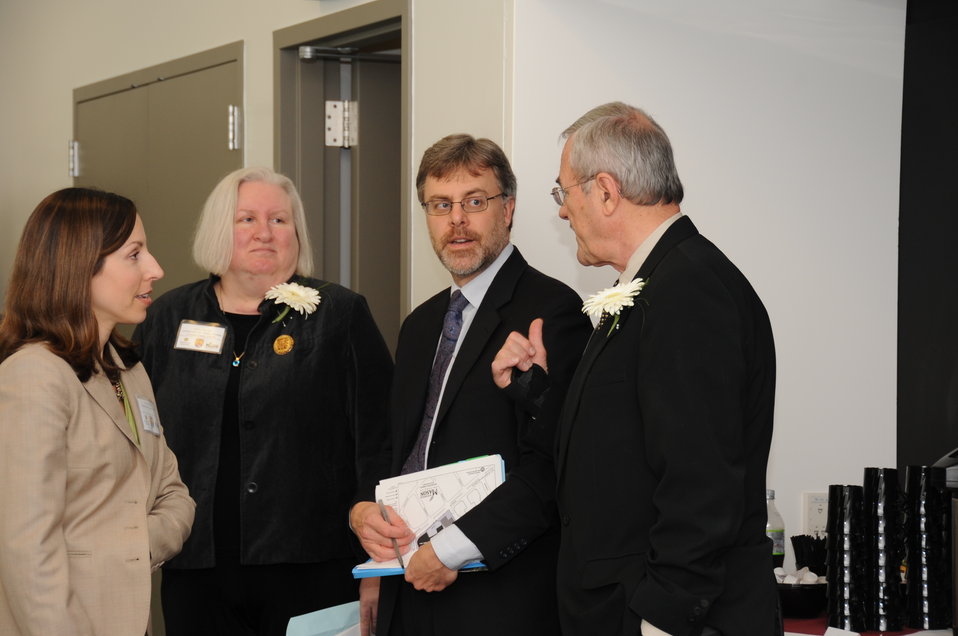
Together in Conservation

Memorandum of Understanding Signing Ceremony with U.S. Fish and Wildlife Service, Smithsonian Institution, and George Mason University. October 26, 2012